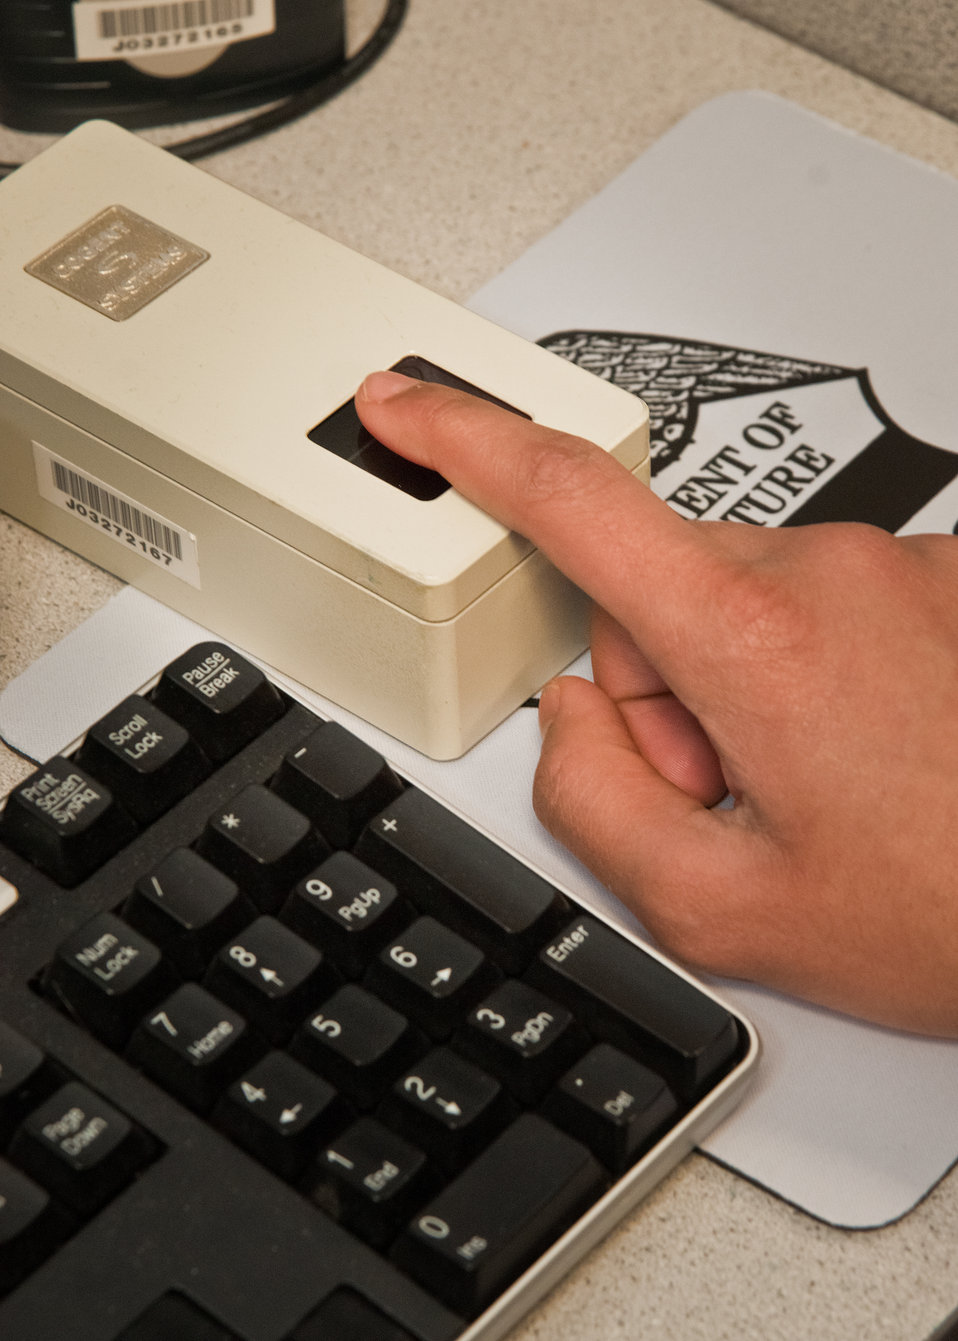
Anthony Rozario, Springbrook High School Academy of Information Technology in Silver Spring, Maryland checks his fingerprint during the enrollment process for a Smart Card identification card at the United States Department of Agriculture (USDA). Rozario and other students attended the USDA Information Technology Job Shadow Day on Wednesday, April 13, 2011, an annual opportunity for students from local high schools to learn the breadth and depth of information technology at USDA and how it is applied the department. Students toured the Network Operations Center, the Badging Office and had a lecture on geospatial technology.